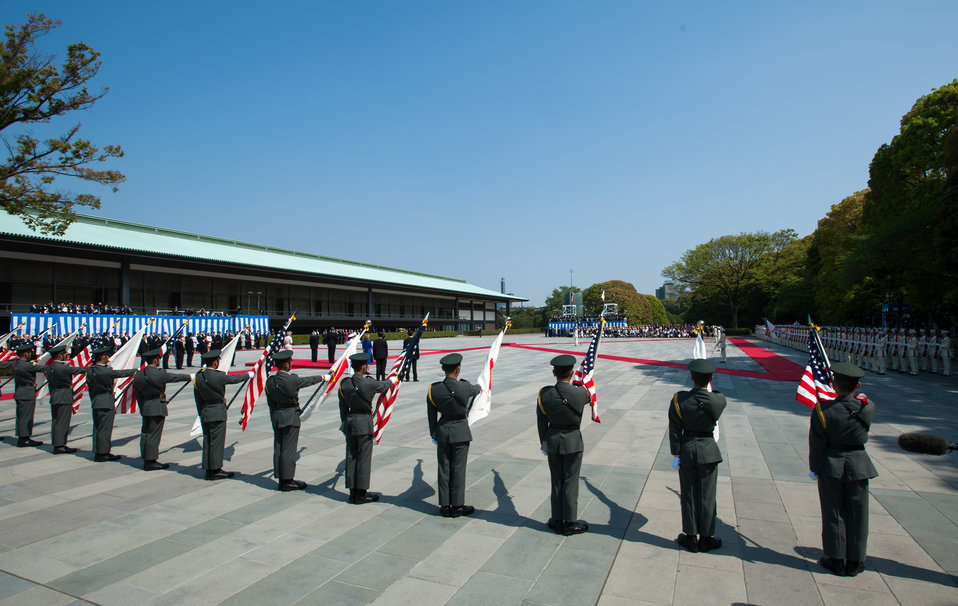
President Obama at the Welcome Ceremony in Japan

U.S. President Barack Obama, with U.S. Ambassador to Japan Caroline Kennedy, participates in the welcome ceremony at the Imperial Palace during his state visit to Tokyo, Japan, on April 24, 2014.